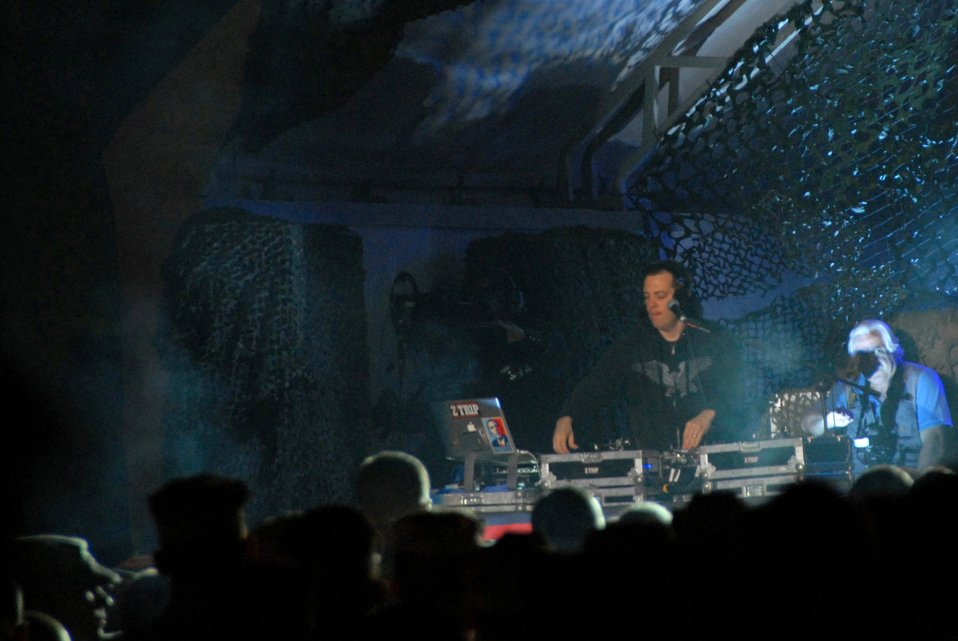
Operation MySpace

Disc jockey Z-Trip performs for more than 2,000 U.S. forces and coalition servicemembers during a live concert March 10 at a U.S. Army camp in Southwest Asia. MySpace, in cooperation with Department of Defense's Armed Forces Entertainment and America Supports You program, brought Operation MySpace to servicemembers headed into and out of Afghanistan and Iraq. This landmark concert, with entertainment acts from Disturbed, Filter, Pussycat Dolls, DJ Z-Trip, and host Carlos Mencia, provided a taste of home via the wonder of live music to troops supporting operations Enduring and Iraqi Freedom.